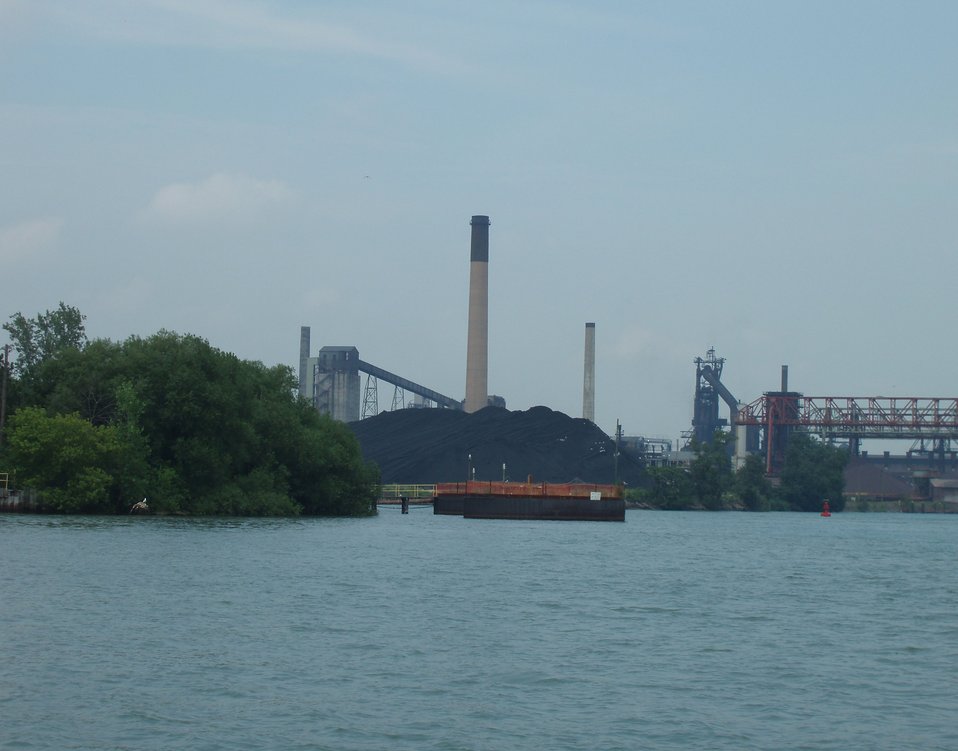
Industry along the Detroit River